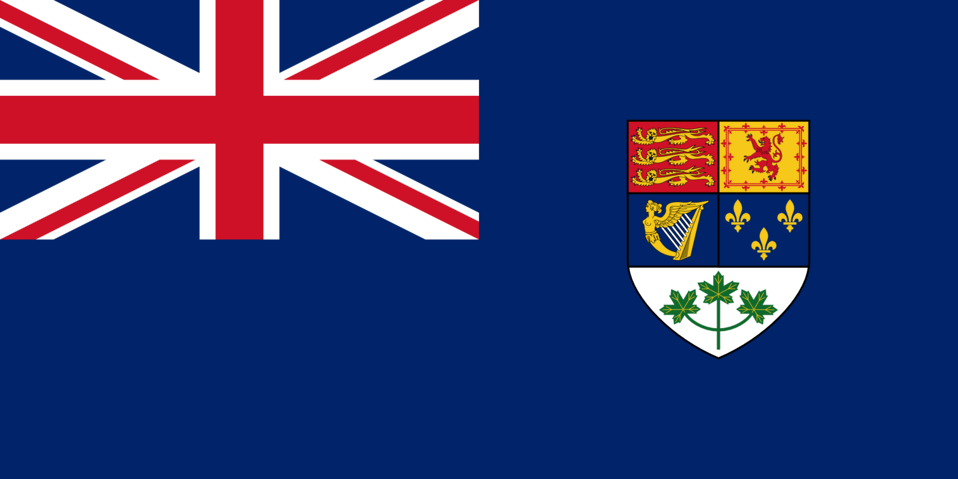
Canadian Blue Ensign 1921-1957